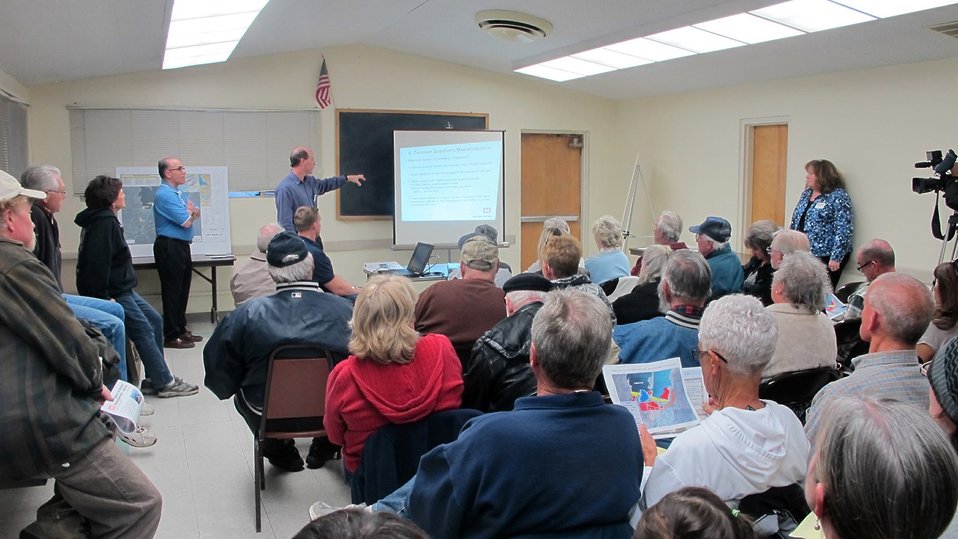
Corps meets with Lake Isabella owners

Nearly 90 property owners and local residents near the U.S. Army Corps of Engineers Sacramento District’s Isabella Lake Dam Safety Modification Project met with project and real estate experts at two public meetings March 26-27, 2014 to discuss impacted properties and proposed real estate actions.